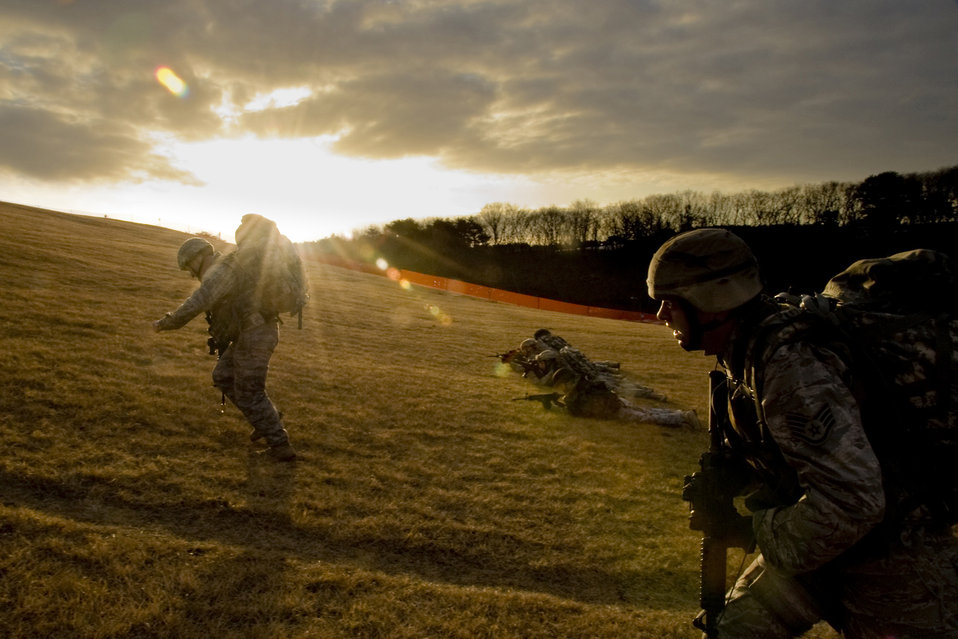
Misawa EOD unit keeps physically fit

Airmen of the 35th Civil Engineer Squadron Explosive Ordnance Disposal flight perform a bounding drill Jan. 8, 2010, at Misawa Air Base, Japan, while going uphill. The drill demonstrated a firing tactic where one group makes their way uphill, while another group engages enemy positions. The groups alternated until both reached their final position.